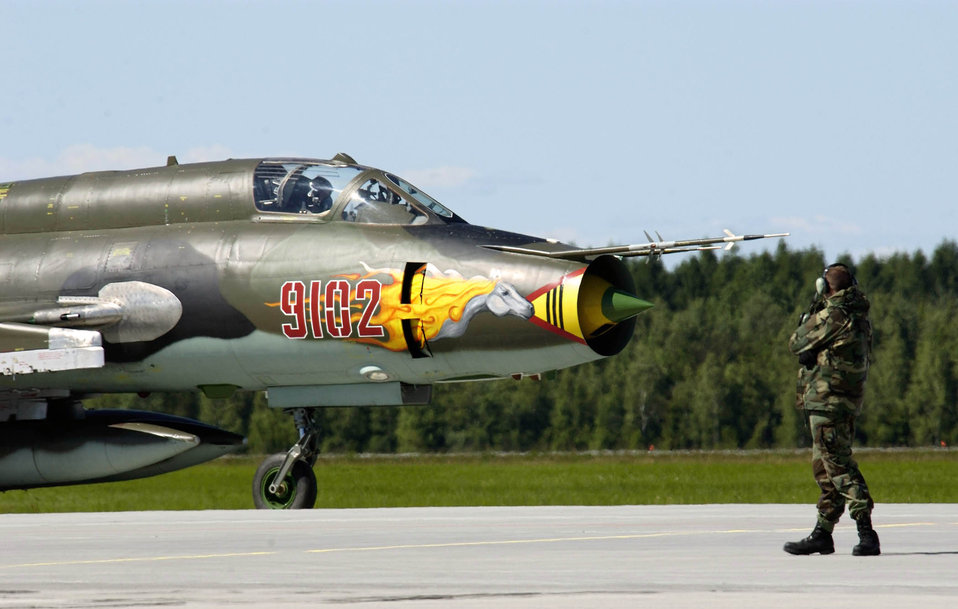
Guardsmen familiarize Polish airmen with F-16

POZNAN, Poland -- An F-16 Fighting Falcon crew chief watches a Su-22 aircraft taxi here. Airmen from the Illinois Air National Guard's 183rd Fighter Wing are familiarizing Polish airmen with the F-16 during the U.S. European Command exercise Sentry White Falcon 2005 through June 17. In 2006, the Polish air force will start receiving their own F-16s that will begin replacing their Soviet-made MiG fighters as the country modernizes its military to NATO standards.